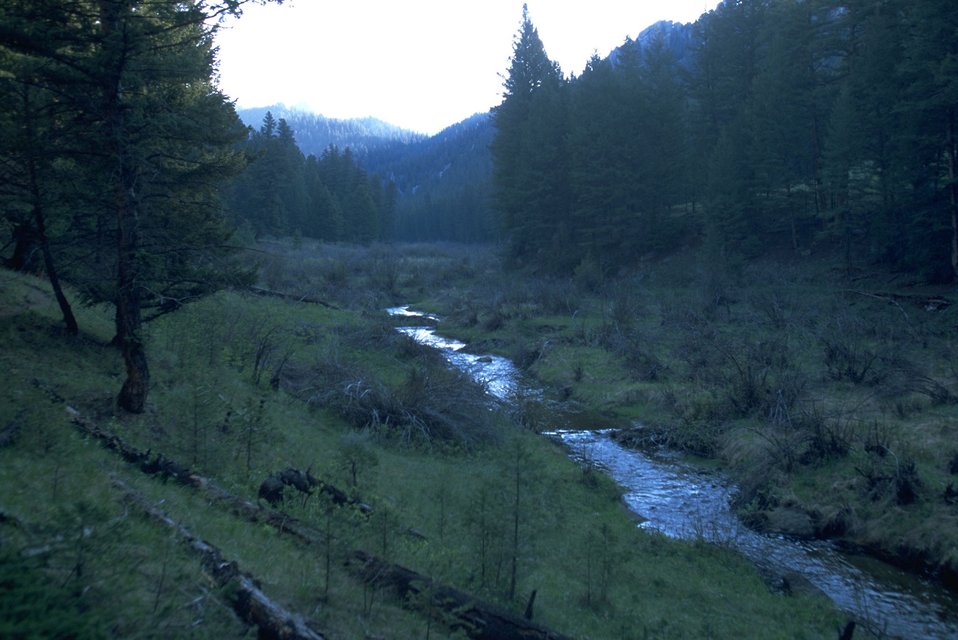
Moose Creek